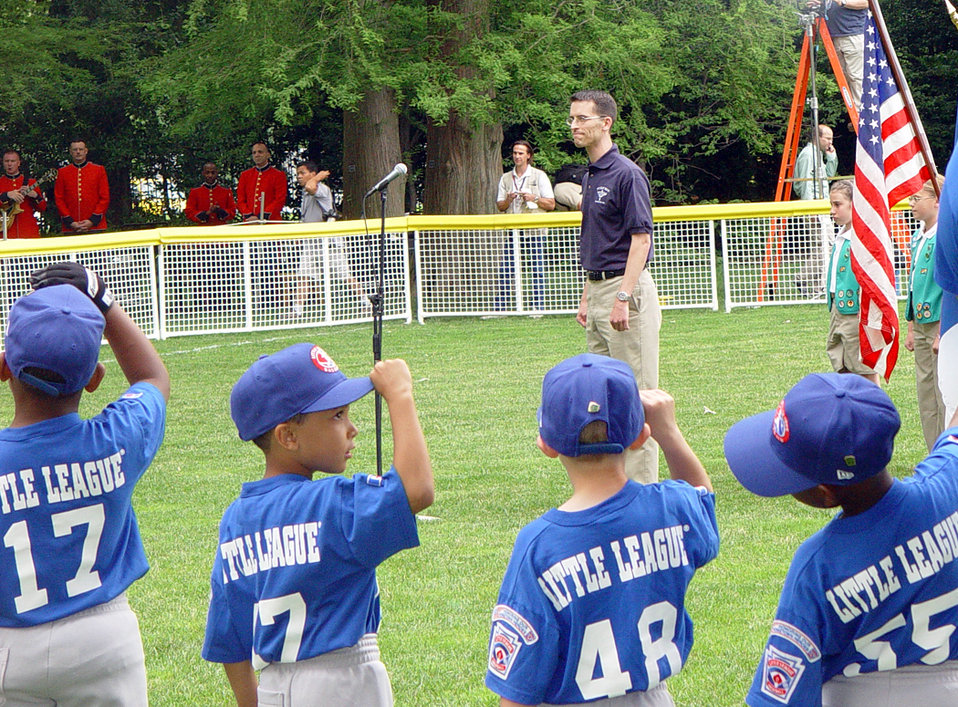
Play ball!

WASHINGTON -- Tech. Sgt. Matthew Irish prepares to sing the national anthem June 13 on the south lawn at the White House before a one-inning T-ball game between the Bolling Air Force Base Cardinals and the Air Station Devil Dogs from Cherry Point Marine Corps Air Station, N.C. President George W. Bush started the program in 2001 to highlight baseball. Sergeant Irish a member of the U.S. Air Force Band.